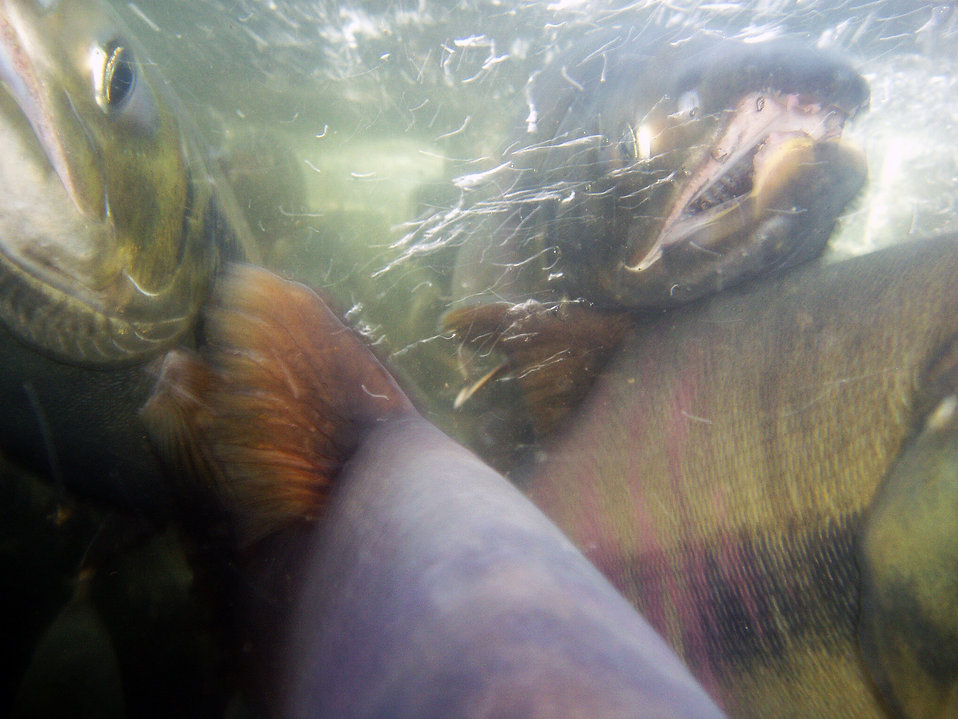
salmon migration